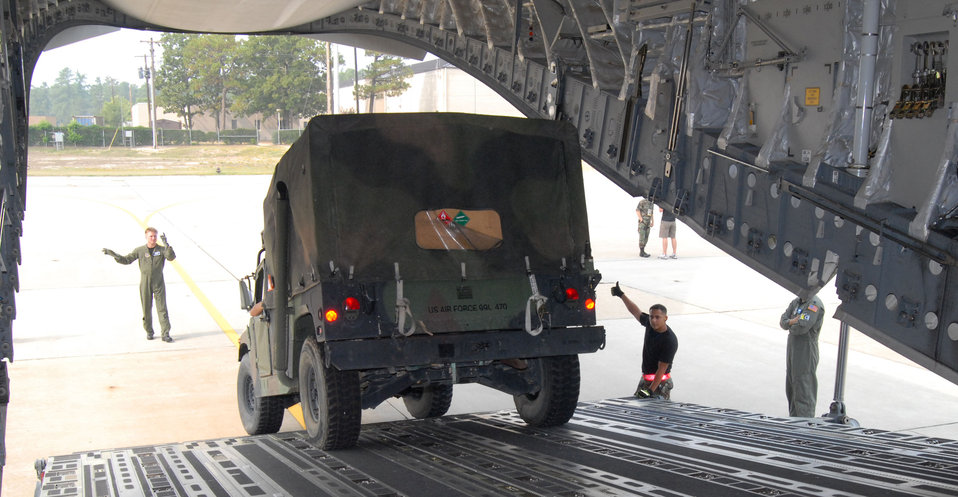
Pope aerovac squadron deploys for Hurricane Dean

Flight and ground crewmembers work together to load a Humvee onto a C-17 Globemaster III at Pope Air Force Base, N.C., Aug. 19. The vehicle and approximately 40 members of Pope AFB's 43rd Aeromedical Evacuation Squadron deployed to set up a Mobile Aeromedical Staging Facility in Brownsville, Texas, in preparation for the approach of Hurricane Dean.